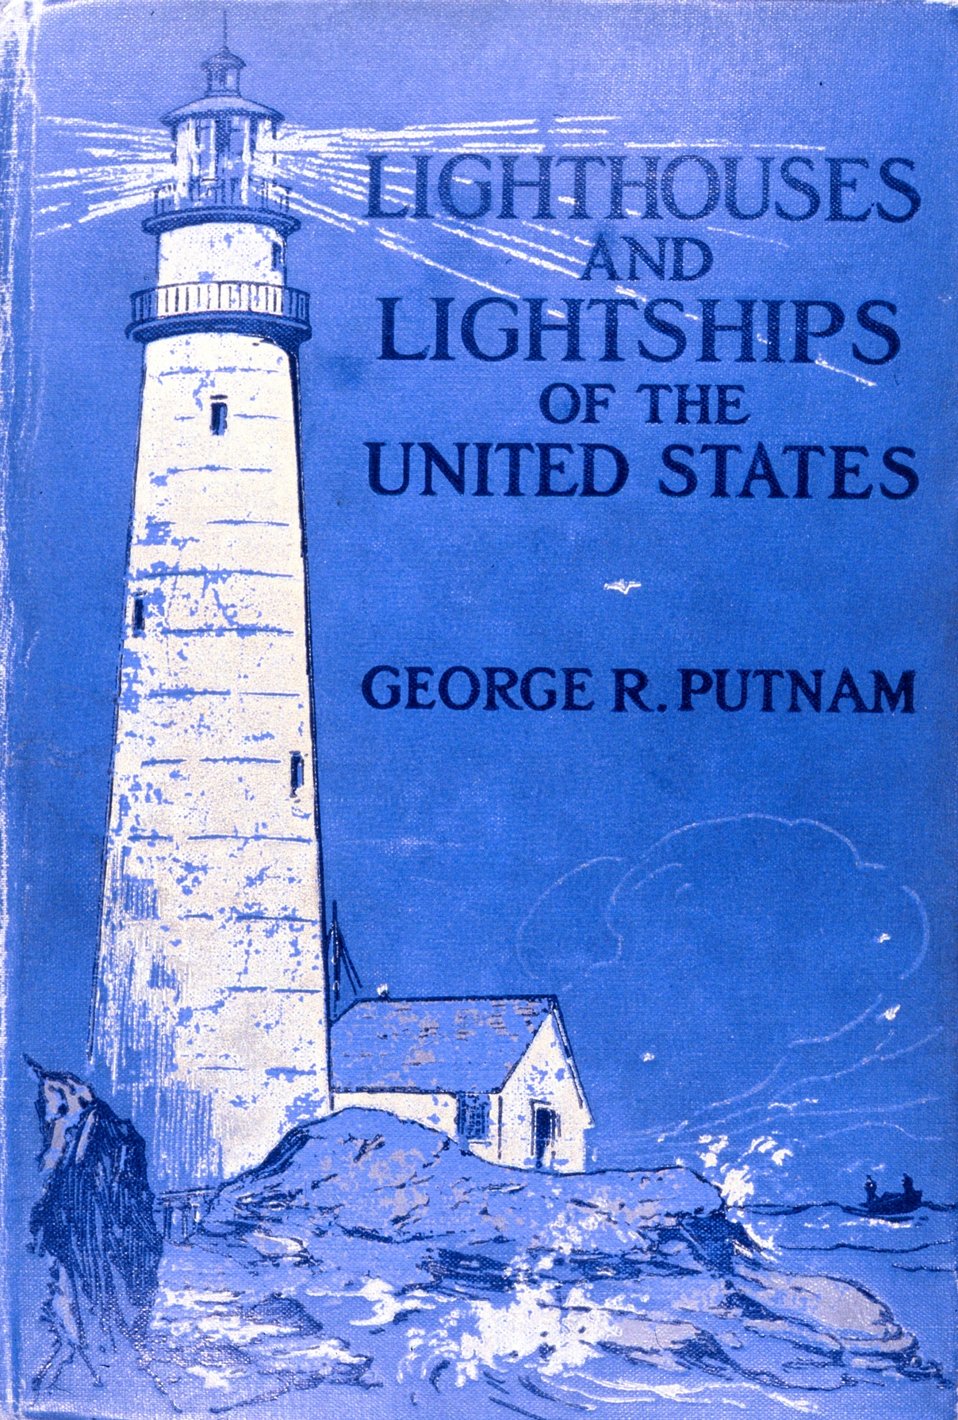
Cover to 'Lighthouses and Lightships of the United States' by George R. Putnam, 1917. Houghton Mifflin and Company, Boston.